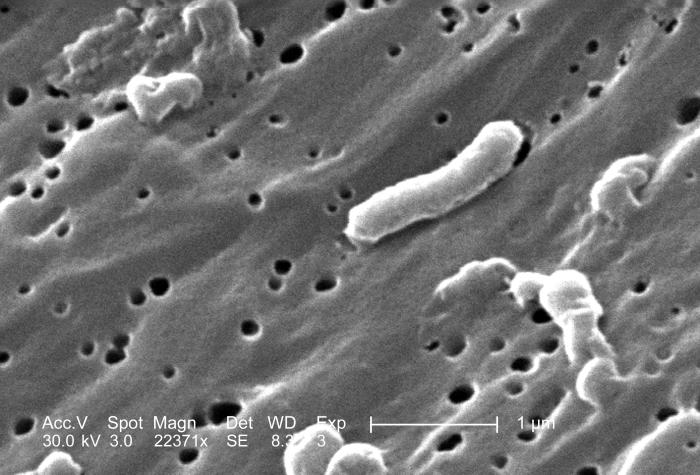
This scanning electron micrograph (SEM) depicted a number of Vibrio cholerae bacteria of the serogroup 01; Magnified 22371x.